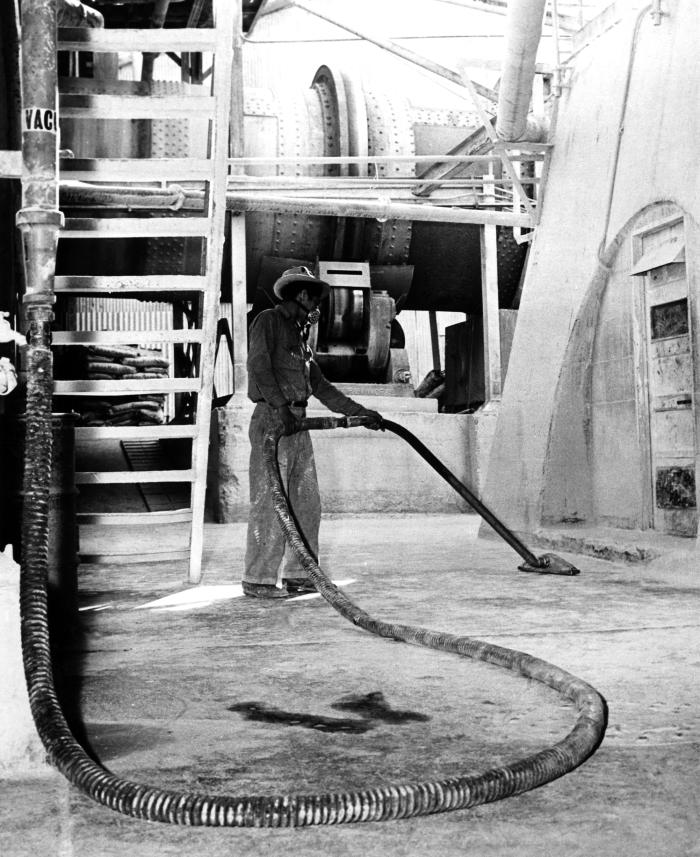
This 1958 historical photograph was provided by the Center for Disease Control's (CDC), National Institute for Occupational Safety and Health (NIOSH), and depicted a worker in Lompoc, California, wearing a respirator while vacuuming the floor of a diatomaceous earth processing operation. The image originally appeared in a U.S. Public Health Service Publication No. 601, in an article entitled,'Pneumoconiosis in Diatomite Mining and Processing', 1958. Inhaled dust or other airborne particulate materials containing silica that is deposited in the lungs, will cause the lung tissue to react by creating generalized nodular fibrotic changes, and is known as 'pneumoconiosis', which is also know an "pneumosilicosis", or 'grinders' disease'.In gaining a better understanding of workplace hazards, protocol-formulating bodies such as NIOSH, are better able to create a safer workplace through substantiation of appropriate safety regulations.